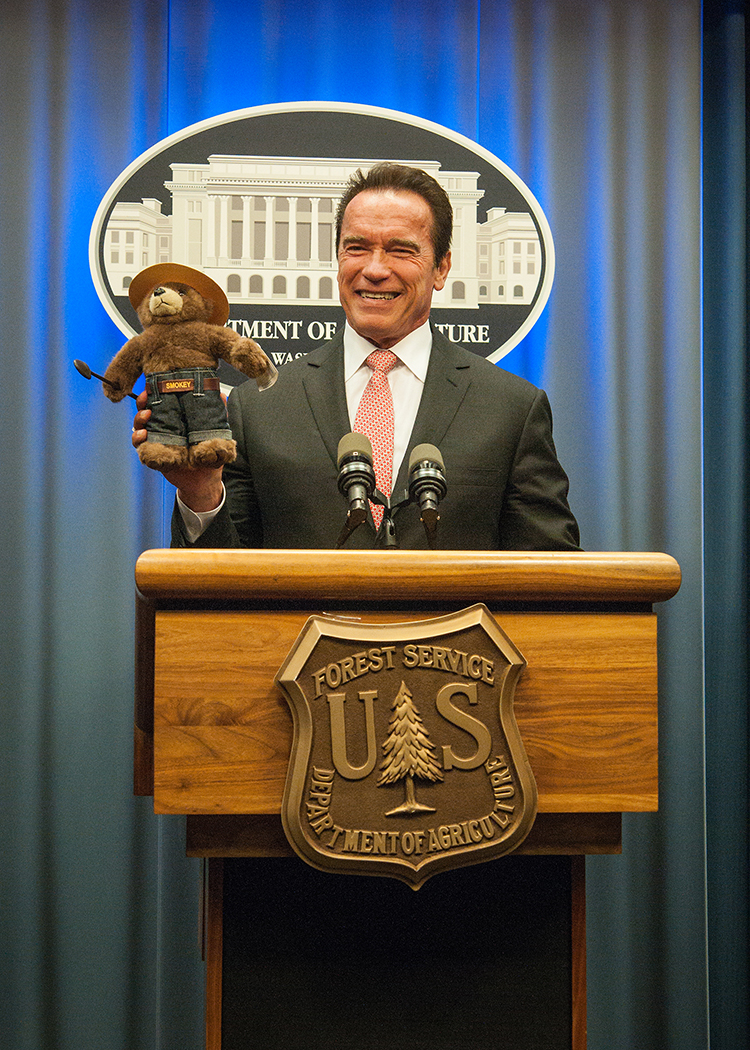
Former California Governor Arnold Schwarzenegger with Smokey Bear during an event honoring Gov. Schwarzenegger as an honorary forest Ranger at the U.S. Department of Agriculture in Washington, D.C. Wed., Oct. 29, 2013. Gov. Schwarzenegger is being honored for his signing and implementing the landmark California Global Warming Solutions Act of 2006 and continued leadership on climate change since leaving office.